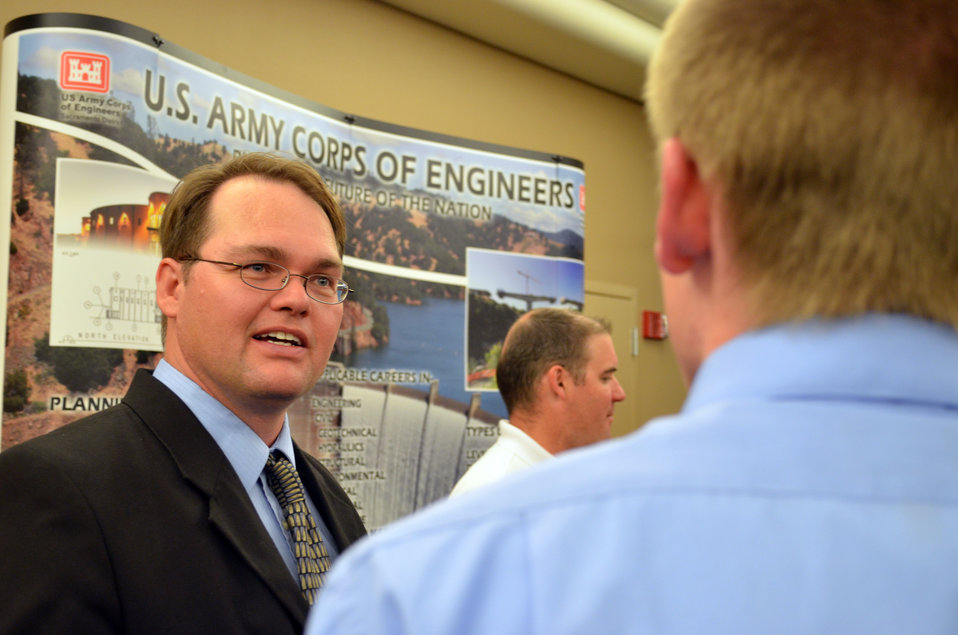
Corps engineers showcase federal jobs to students at Career Fair

Water quality specialist J.J. Baum (left), with the U.S. Army Corps of Engineers Sacramento District, speaks to a California State University-Sacramento student during a career fair in Sacramento, Calif., Nov. 3, 2011. Baum and Will Hall (center), senior technical lead for the design branch, spoke to more than 40 students about internships and job opportunities with the Corps, aimed at students in engineering fields.